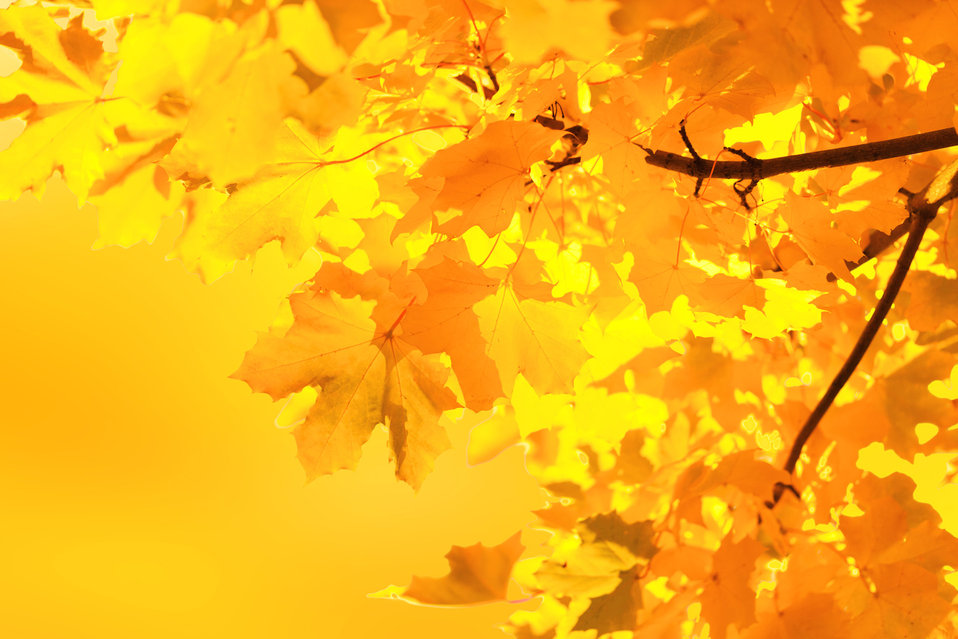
Yellow maple leaves on blurred yellow background.